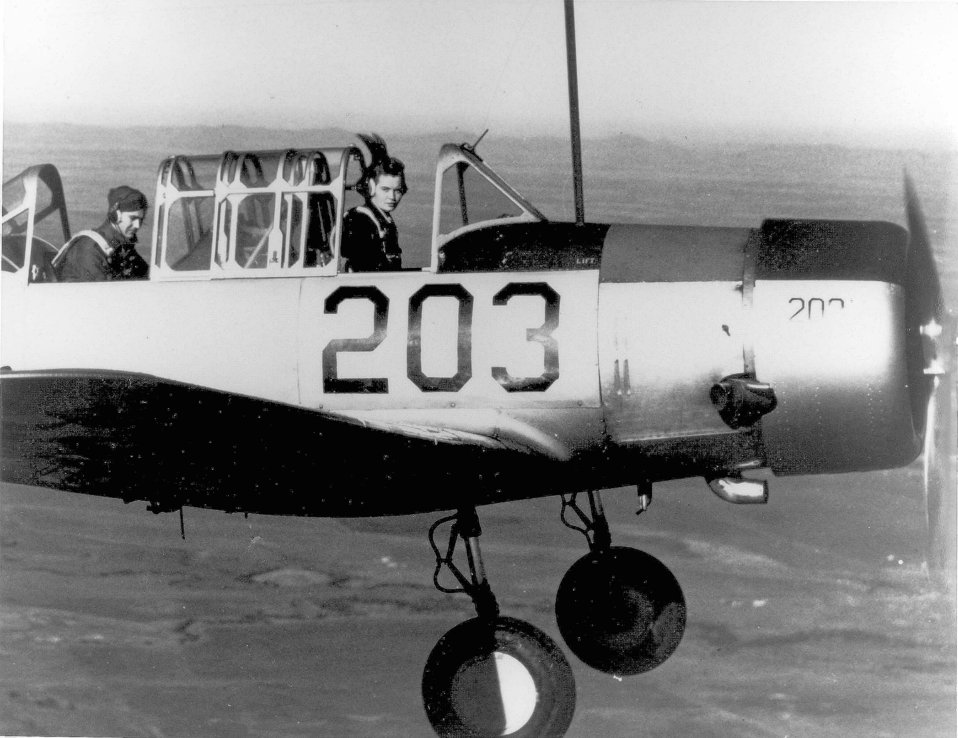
Wilda Winfield

EARLY YEARS -- WASP Wilda Winfield on photographic mission at Frederick AAF, Frederick, Oklahoma.